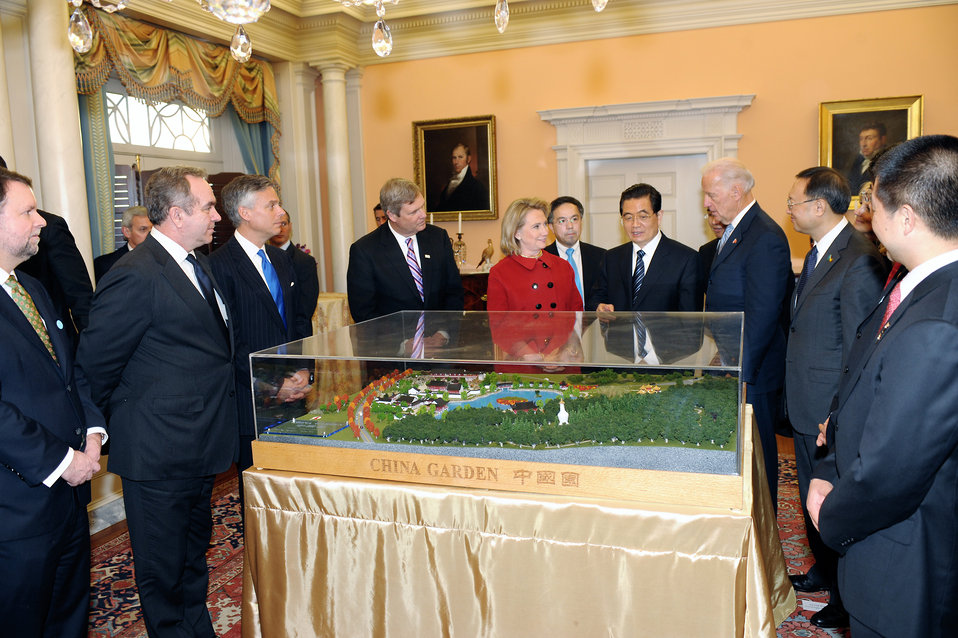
Secretary Clinton, Vice President Biden, and Secretary Vilsack Show Chinese President Hu Jintao a Model of the Proposed China Garden

U.S. Secretary of State Hillary Rodham Clinton, U.S. Vice President Joseph Biden, and U.S. Secretary of Agriculture Tom Vilsack show Chinese President Hu Jintao a model of the proposed China Garden in the National Arboretum at the U.S. Department of State in Washington, D.C., on January 19, 2011.